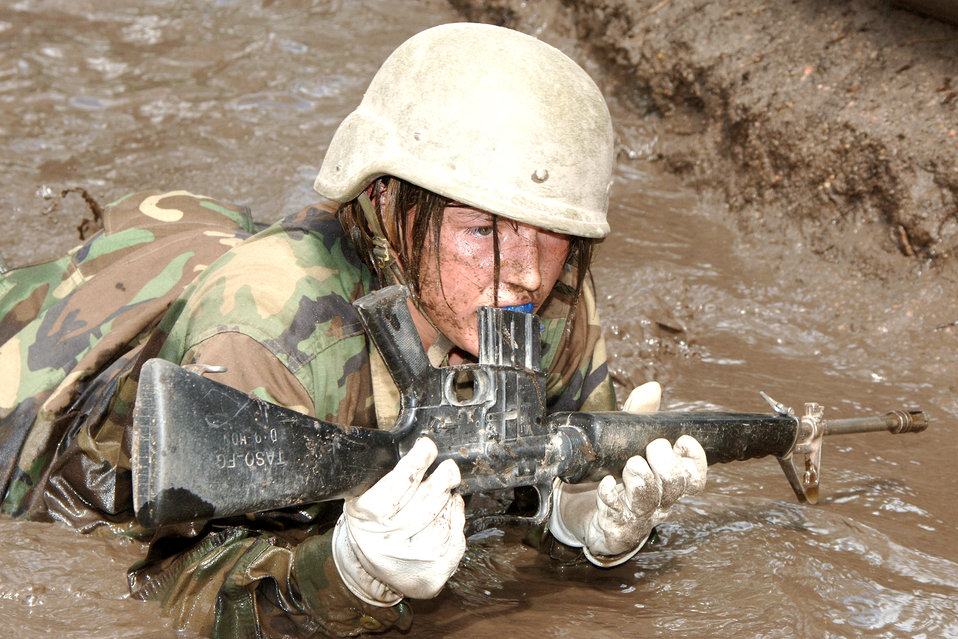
Basic cadets focus on next training obstacle

U.S. AIR FORCE ACADEMY, Colo. -- Basic Cadet Jennifer Stewart keeps her weapon dry as she crawls through the mud on the assault course in Jacks Valley.